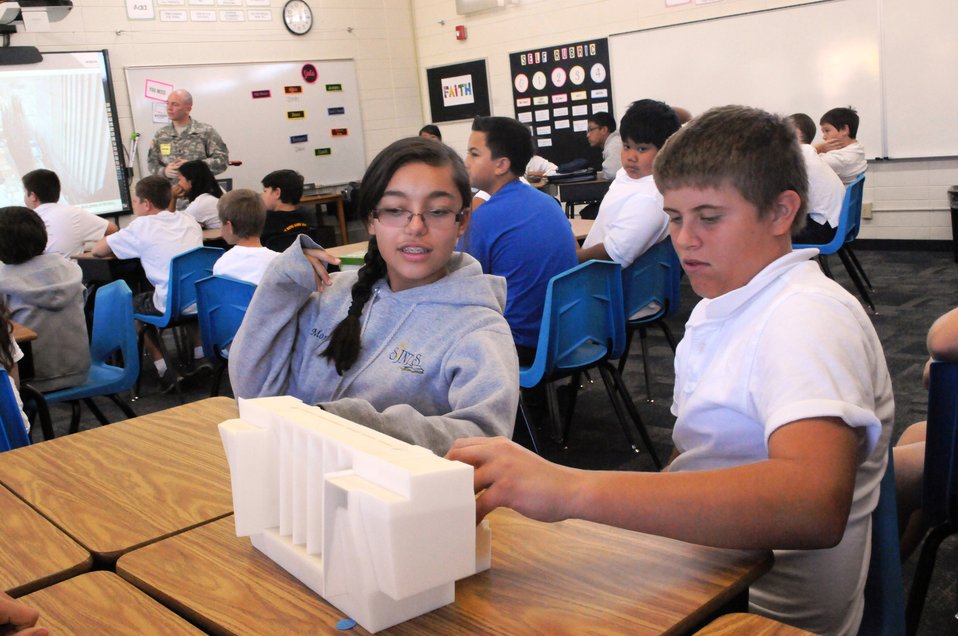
Students at St. John Notre Dame School in Folsom, Calif., practice opening the gates of a scale model of the Folsom Dam auxiliary spillway Sept. 18, 2013. U.S. Army Corps of Engineers Sacramento District staff visited the school to explain the major flood risk reduction project under construction in Folsom and the importance of studying science, technology, engineering and math.